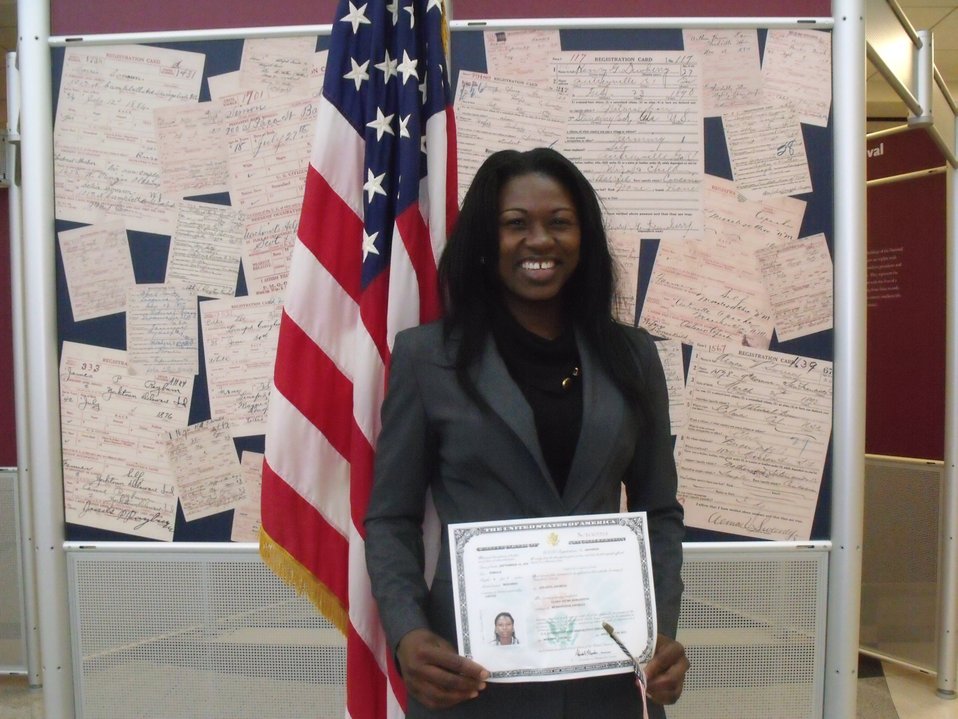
New Citizens